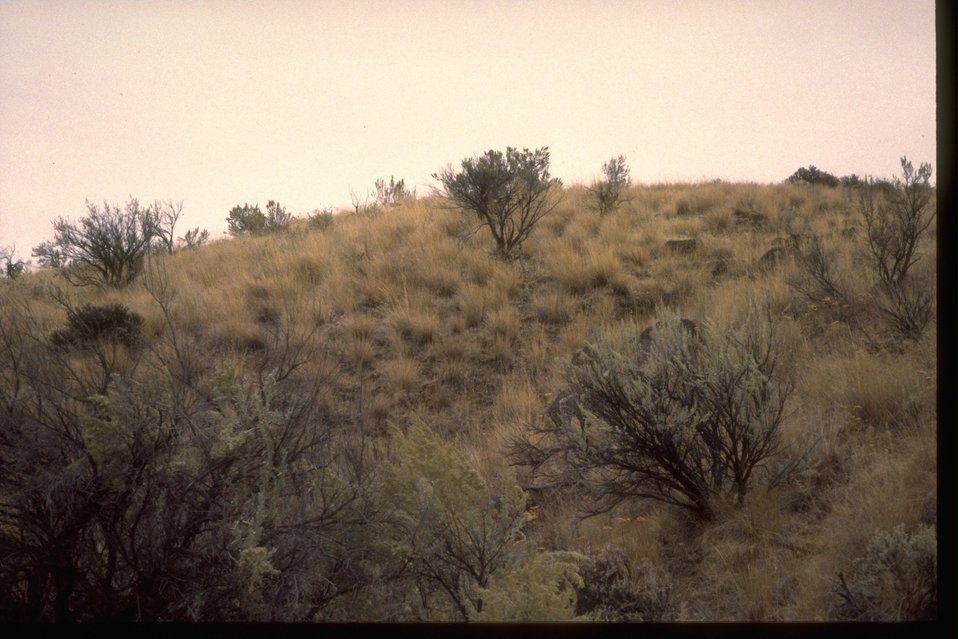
Idaho Fescue in excellent condition on north slope in central Oregon.